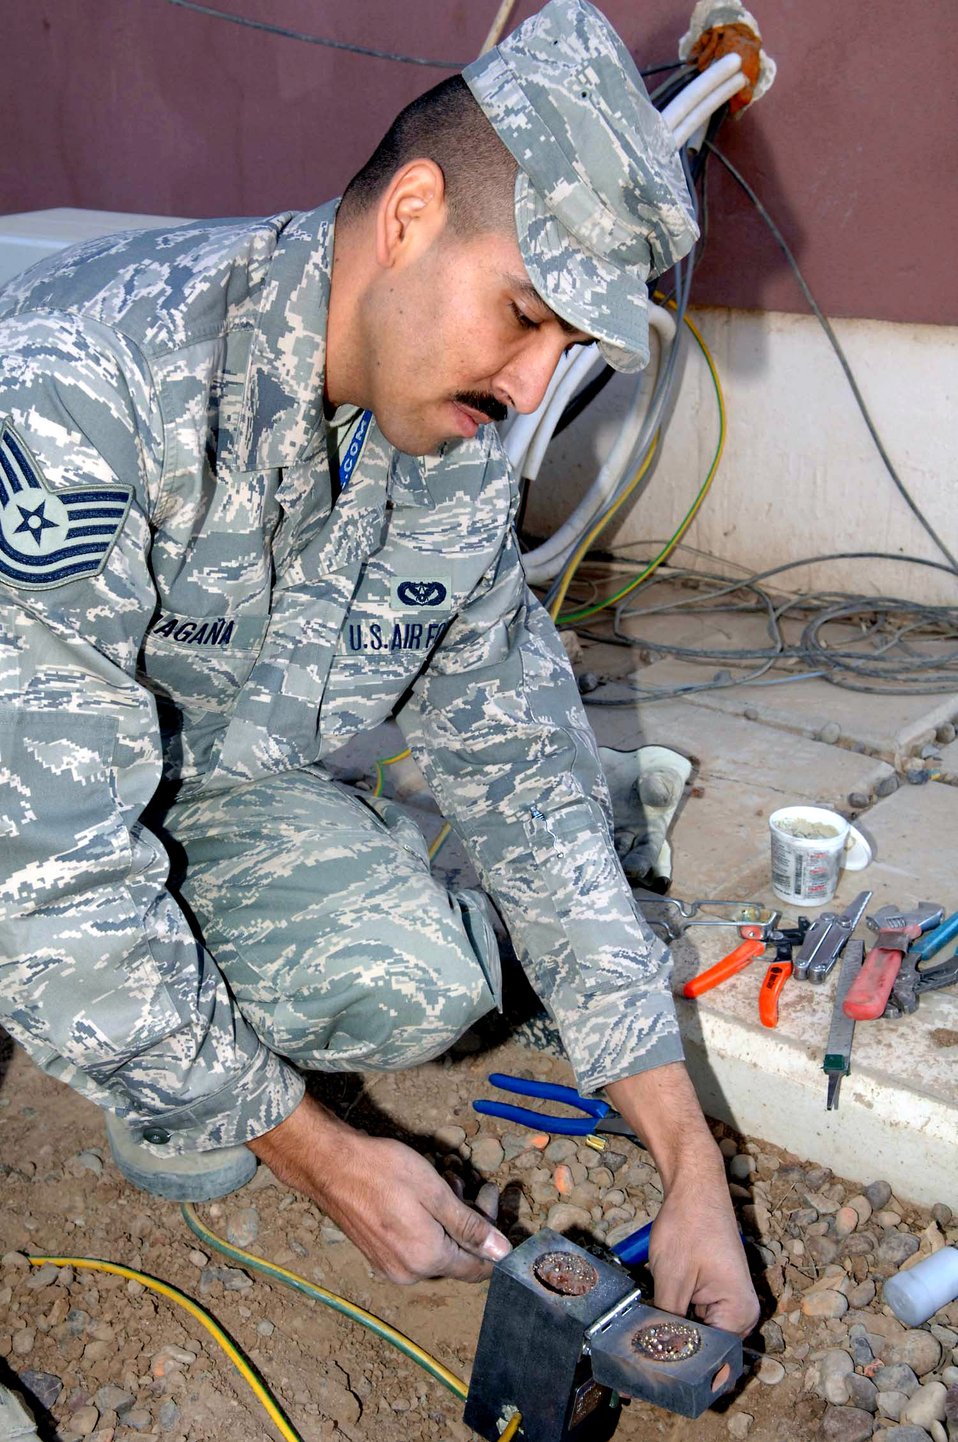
Let there be fire

Tech. Sgt. Victor Magana puts an exothermic welder in place Dec. 11 before attempting to ignite it while working at Balad Air Base, Iraq. The welder will be used to fuse two pieces of ground wire together preventing static electricity from damaging nearby communication lines. As an electrician, Sergeant Magana is responsible for installing and maintaining all interior and exterior electrical systems and distribution networks on base. Sergeant Magana is assigned to the 332nd Expeditionary Civil Engineer Squadron and is deployed from Barksdale Air Force Base, La.